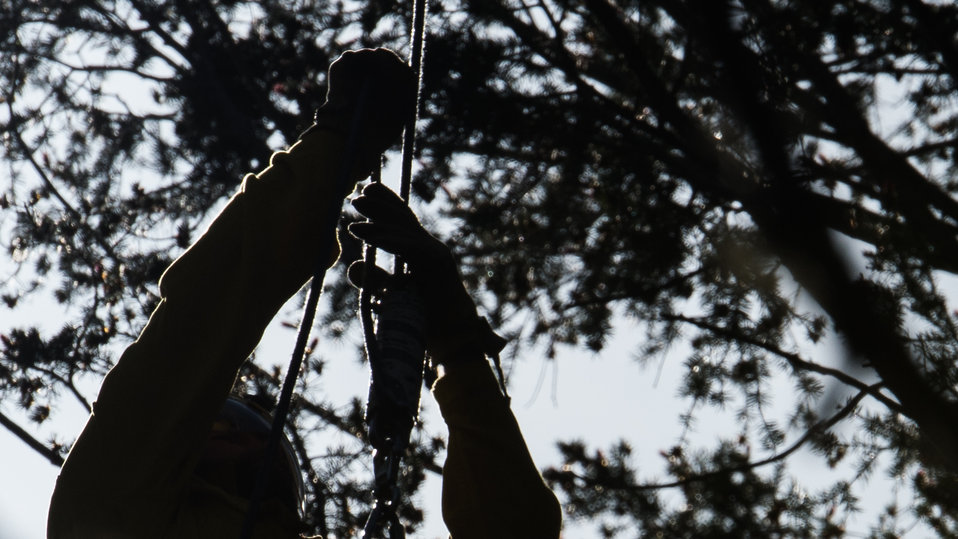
Veteran wildland firefighter rappellers use various techniques to negotiate the wind from the helicopter rotor blades above them, and away from tree branches, beside and below, as they perform a controlled and safe descent at the U.S. Department of Agriculture (USDA) U.S. Forest Service (USFS) National Helicopter Rappel Program’s Rappel Academy at Salmon Air Base in Salmon, ID on Thursday, May 15, 2014. From May 12, 2014, 72 veteran rappellers from all over the nation, 30 support staff, and three helicopters with flight crews attend the training at Salmon Air Base. Participants will rappel into the Perreau Creek area. The annual training is delivered in accordance with the National Rappel Operations Guide; strengthen leadership, teamwork, and communications within the rappel community, and produces quality aerial delivered firefighters for use in fire and aviation operations. The USDA Forest Service National Helicopter Rappel Program’s primary mission is initial attack. Rappel crews may be utilized for large fire support, all hazard incident operations, and resource management objectives.